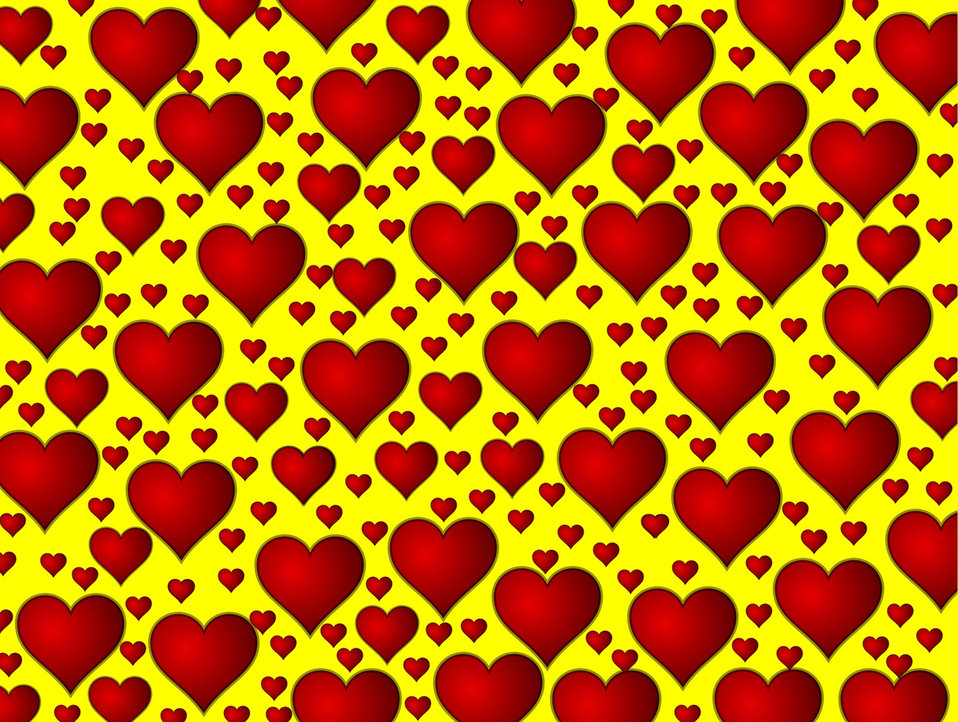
Hearts 6

Background.